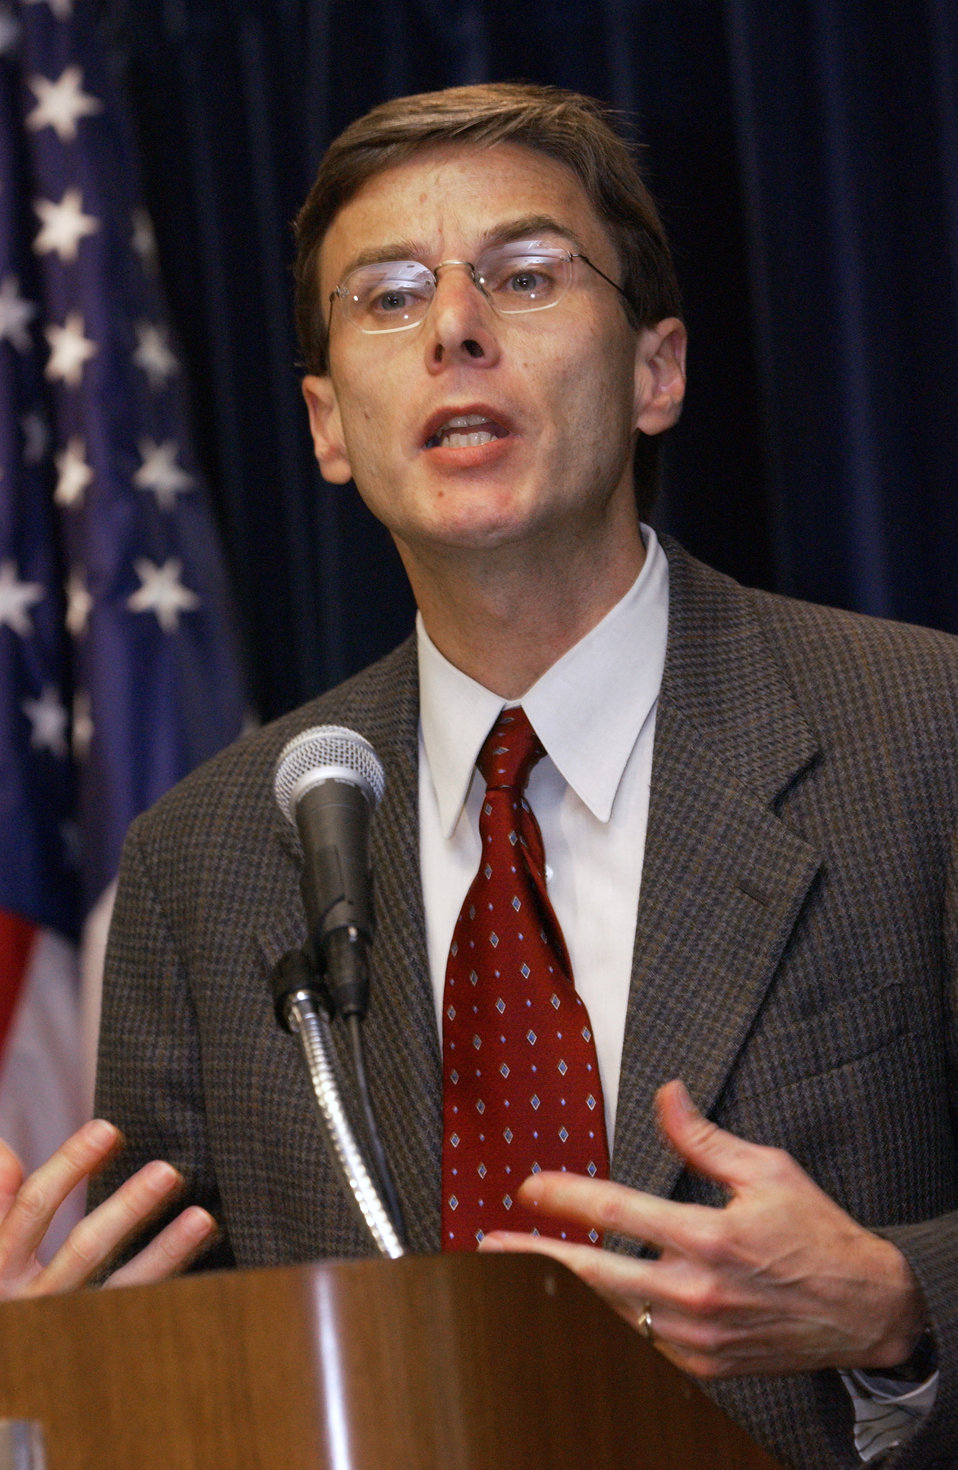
This was a Monkeypox Update press briefing presented by Dr. David Fleming, June 11. 2003.